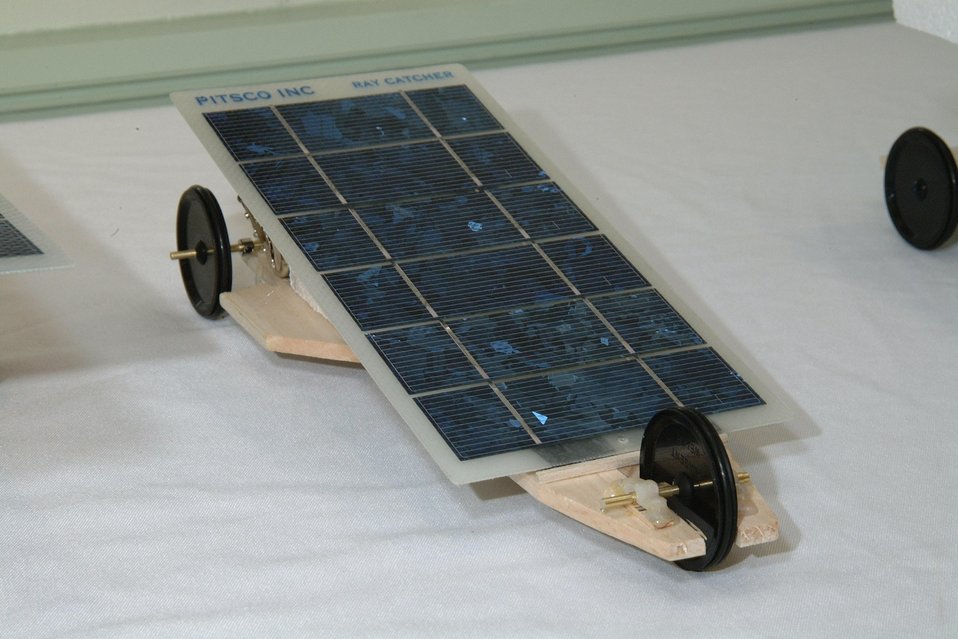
MODEL SOLAR CAR ENTERED INTO RACE AS PART OF DOE'S NATIONAL MIDDLE SCHOOL SCIENCE BOWL.

THE DEPARTMENT OF ENERGY SPONSORED THE FIRST NATIONAL MIDDLE SCHOOL SCIENCE BOWL ON MARCH 21-24, 2002 IN WASHINGTON, DC AT DOE HEADQUARTERS FORRESTAL BUILDING. ON MARCH 23RD THE COMPETITION INCLUDED A MODEL SOLAR CAR RACE HELD AT THE NATIONAL 4-H CONFERENCE CENTER, CHEVY CHASE, MD. THE MODEL CARS WERE DESIGNED AND CONSTRUCTED BY THE TEAM MEMBERS.